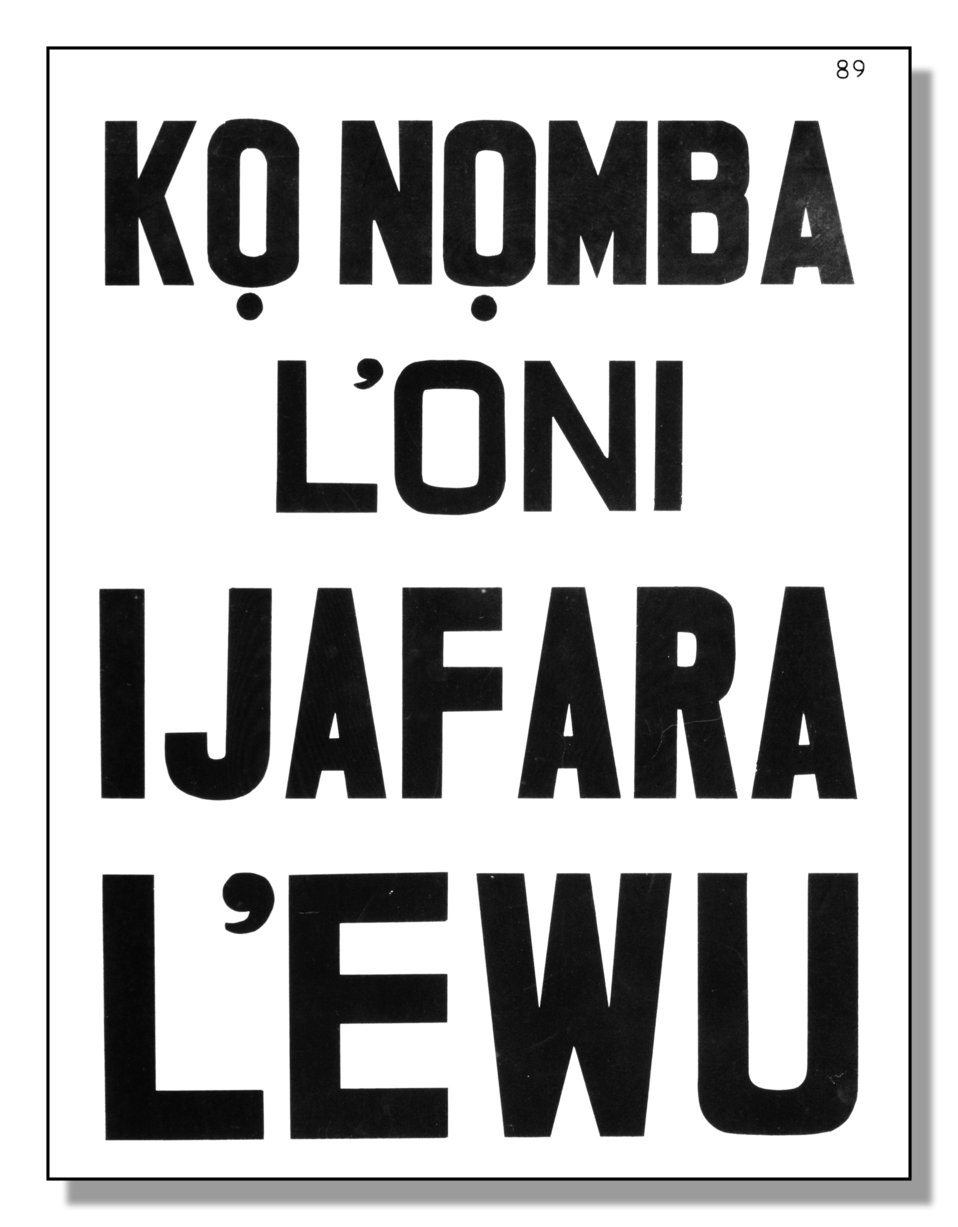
This poster was created prior to 1979 promoting the importance of Smallpox and Measles vaccination in foreign lands.